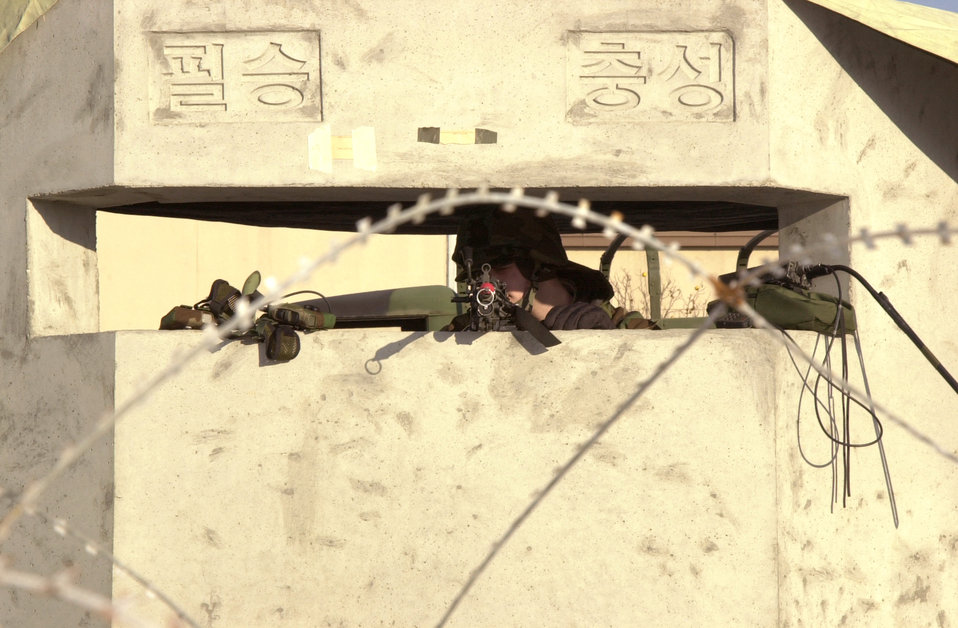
Headquarters security

KUNSAN AIR BASE, South Korea -- Airman 1st Class John Pace mans a defensive position in front of the 8th Fighter Wing Headquarters during an exercise here Dec. 13. Airman Pace is assigned to the 8th Security Forces Squadron.